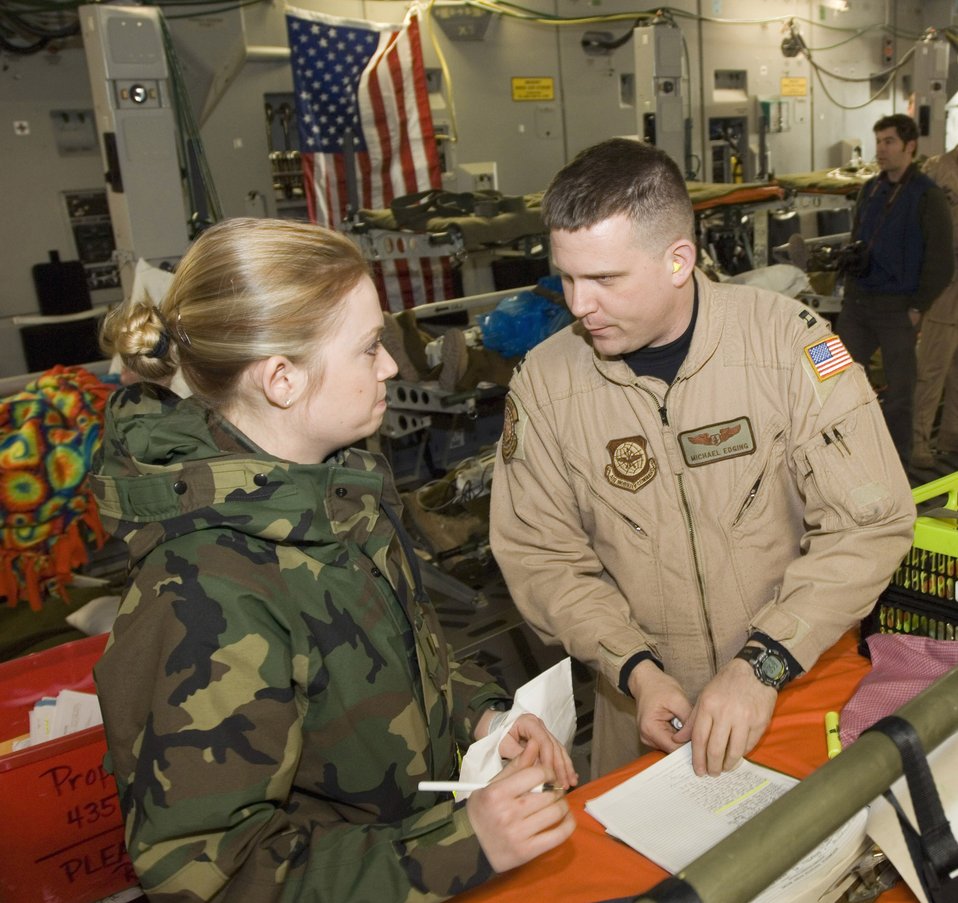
C-17 surpasses its 1 millionth flying hour

Second Lt. Dana Erickson, left, and Capt. Michael Edging exchange patient information on a C-17 Globemaster III at Ramstein Air Base, Germany, on Monday, March 20, 2006. The aircraft flew a routine mission to deliver cargo to Al Asad, Iraq, and picked up patients at Balad Air Base, Iraq, for the return flight. The Mississippi Air National Guard transport surpassed the transport fleet's 1 millionth hour of flight milestone. Lieutenant Erickson is on temporary duty at Ramstein's 435th Contingency Aeromedical Staging Facility. Captain Edging is on temporary duty with Ramstein's 791st Expeditionary Aeromedical Evacuation Squadron.